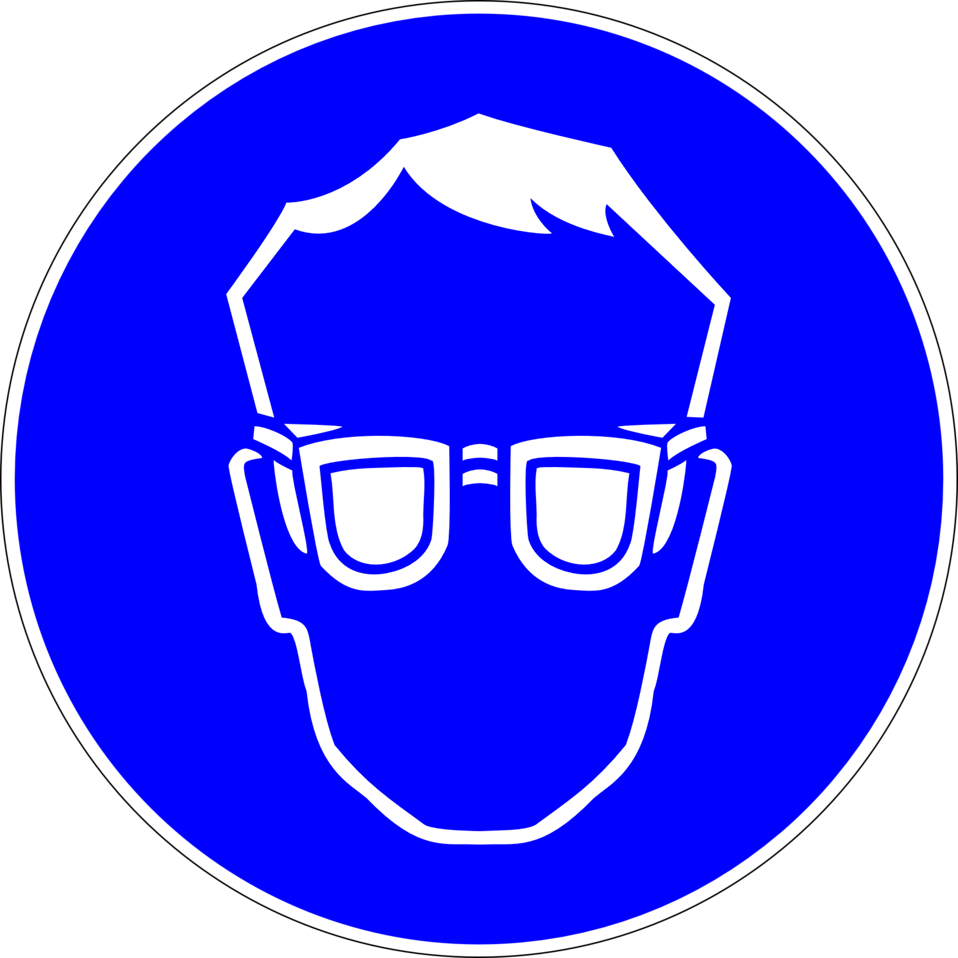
Deutsch: Augenschutz benutzen, Gebotszeichen D-M001 nach DIN 4844-2 Use protective eyewear, mandatory action symbol D-M001 according to German standard DIN 4844-2